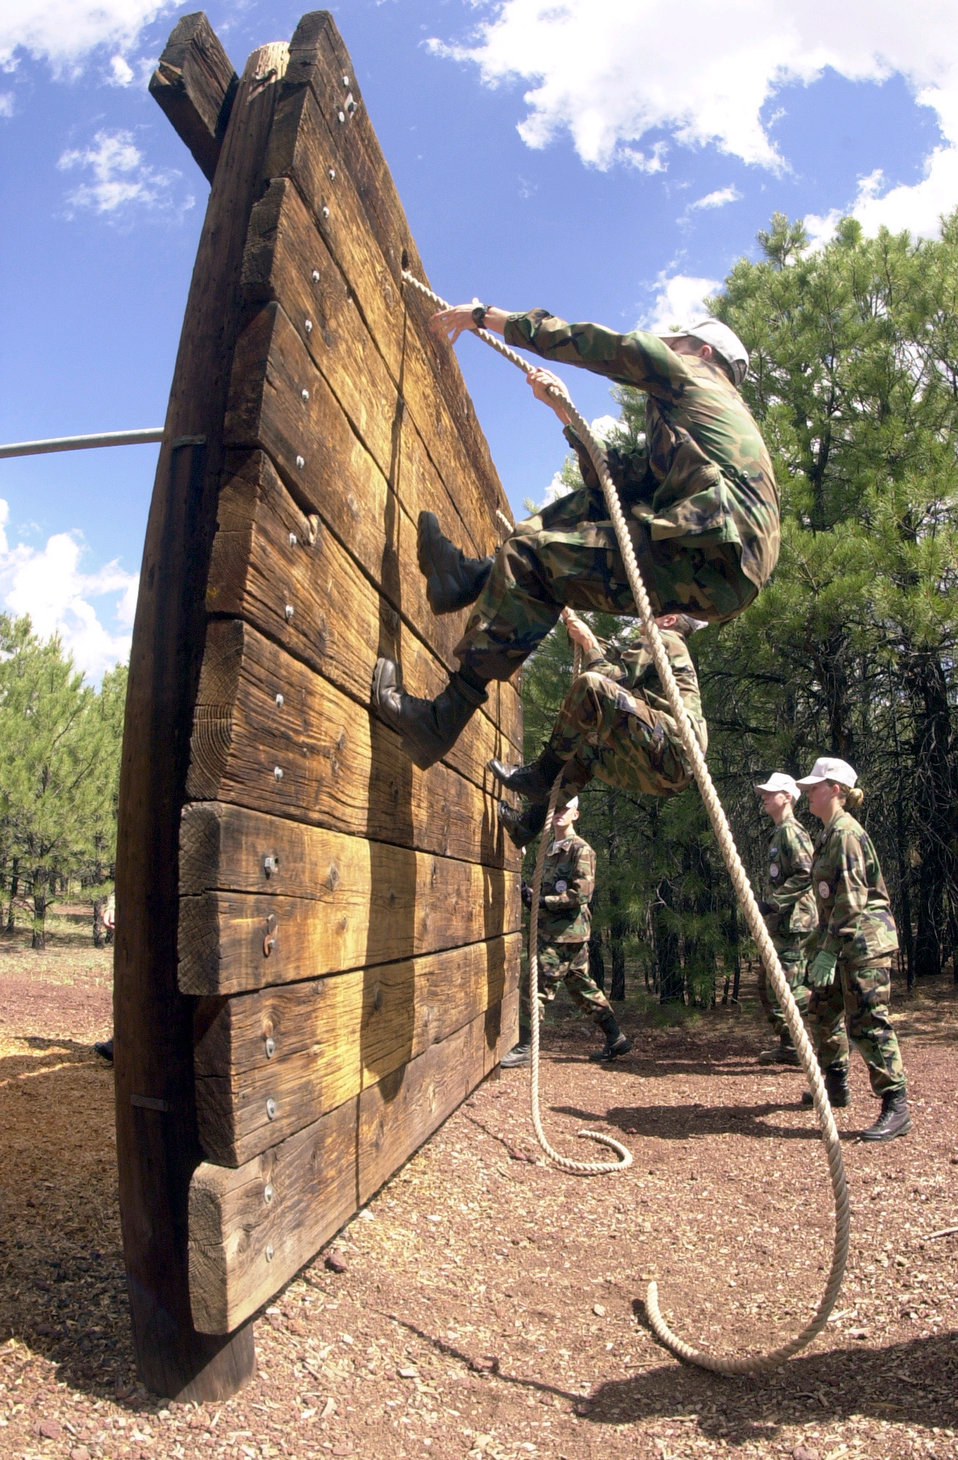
Climbing the wall

CAMP NAVAJO, Ariz. -- Air Force junior ROTC cadets climb an obstacle at the confidence course competition during Air Force JROTC Summer Leadership School here Aug. 3. Airmen from the 56th Fighter Wing at Luke Air Force Base, Ariz., assisted in training 140 high school cadets from Dobson, Desert Ridge, Mesa, Peoria and Westwood high schools.